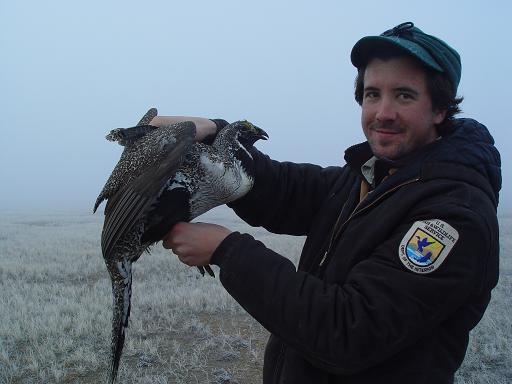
Helping Sage Grouse

David Jachowski, USFWS biologist, assists with a sage grouse study on Charles M. Russell NWR.